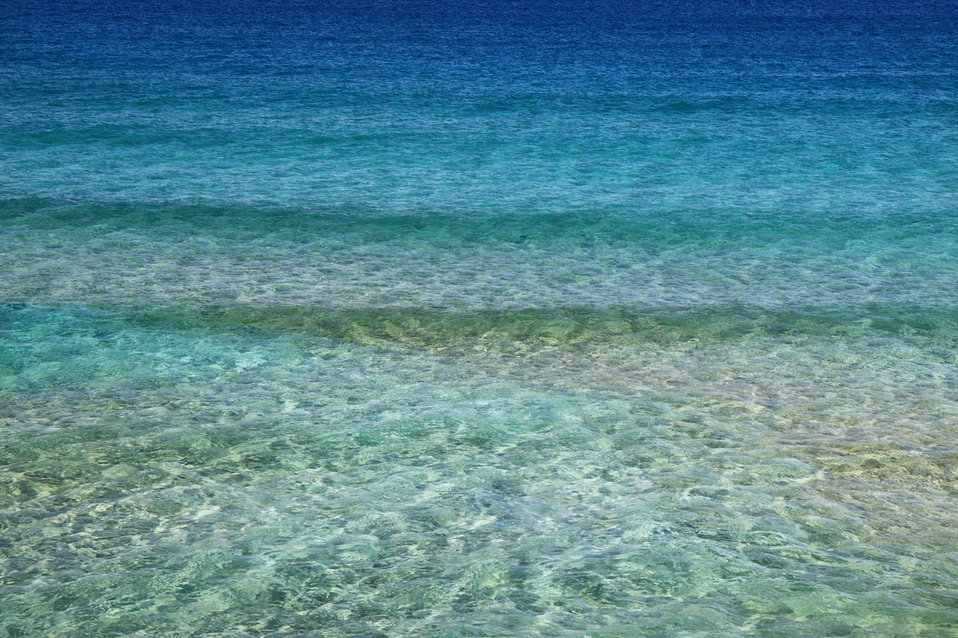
Sea surface

Sea water surface.